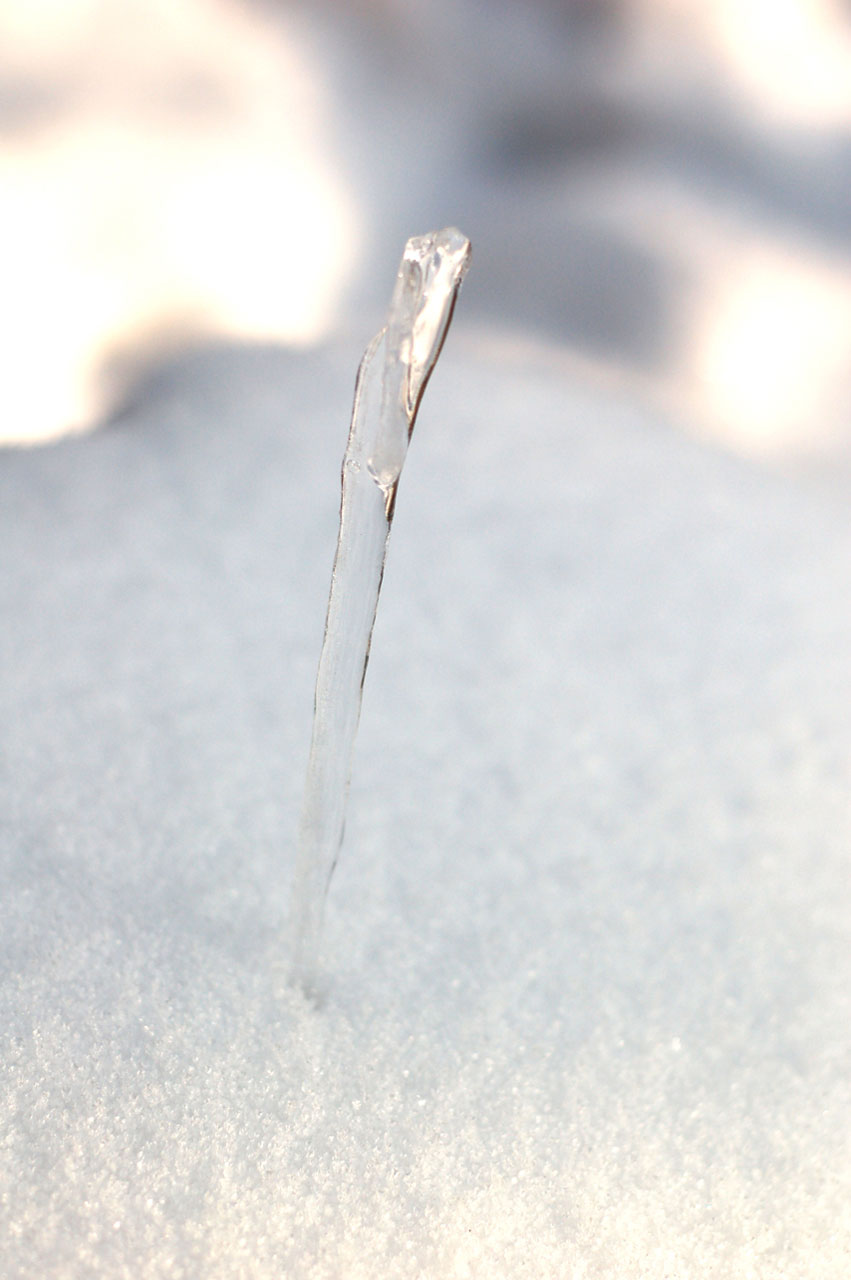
Icicle

Single icicle in the snow.